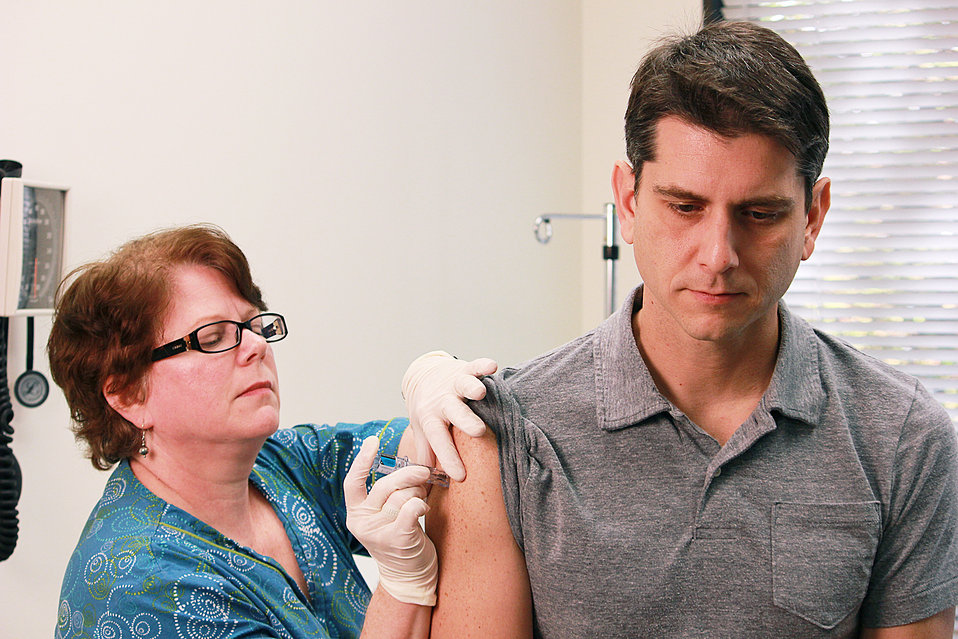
Taken inside a clinical setting, this qualified nurse, after having sterilized the injection site, was in the process of properly-administering a dose of Fluzone� intradermal influenza virus vaccine. Here, the nurse was delivering the vaccine to the patient's right shoulder region.